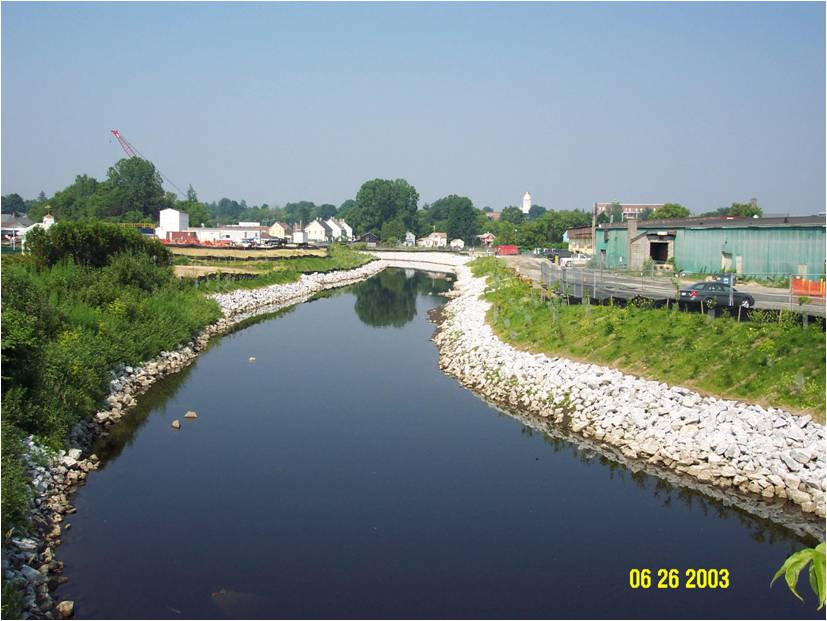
(Earlier photo) 2003 'AFTER' cleanup view from Lyman Street, Pittsfield, MA

The 2003 view from Lyman Street in Pittsfield, MA immediately atfer the cleanup work. See following photos for the river's recovery.